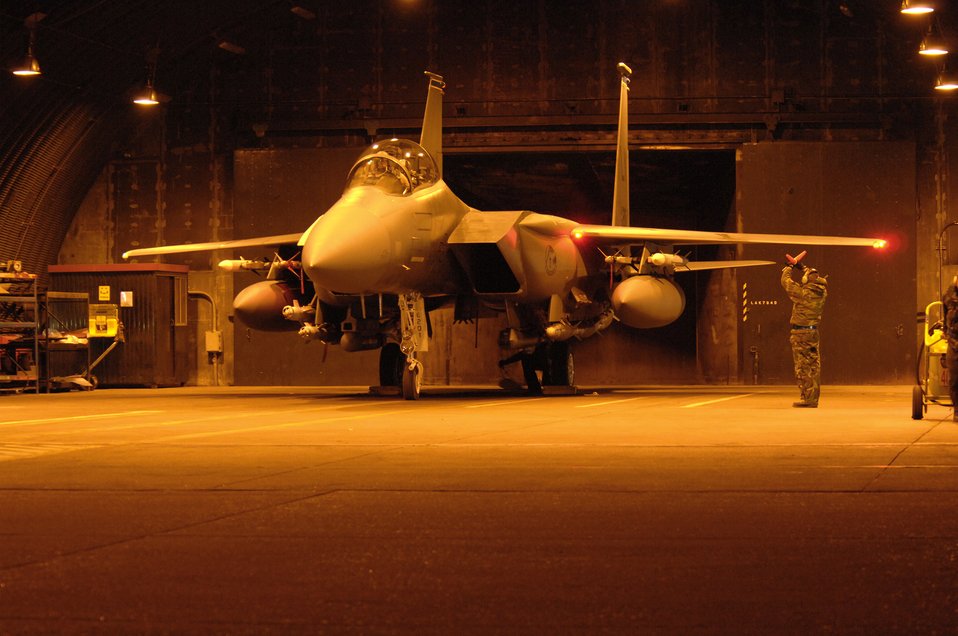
Odyssey Dawn

Maj. Lucas Teel, 492nd Fighter Squadron pilot, and Lt. Col. Clint Mixon, 492nd FS commander, prepare to taxi their F-15E Strike Eagle prior to their departure from RAF Lakenheath, England, March 19, 2011. Units from the 48th Fighter Wing are currently conducting pre-deployment procedures in support of Operation Odyssey Dawn. The 48th Fighter Wing provides all-weather, day or night air superiority and air-to-ground precision combat capability as well as combat search and rescue.